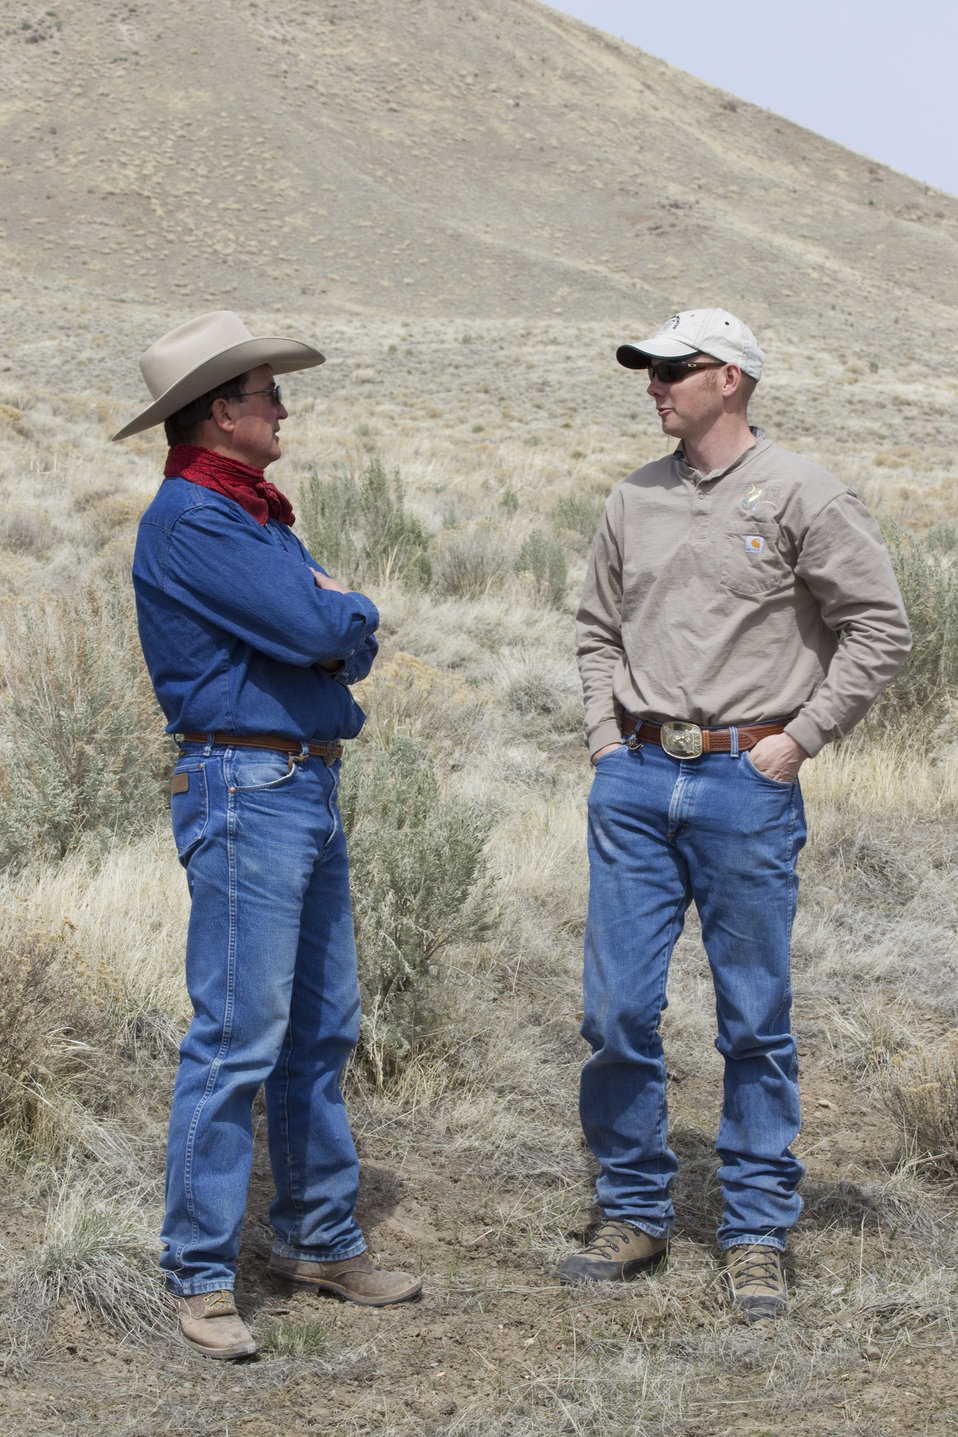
Landowner Meeting with Partners for Fish & Wildlife Program biologist